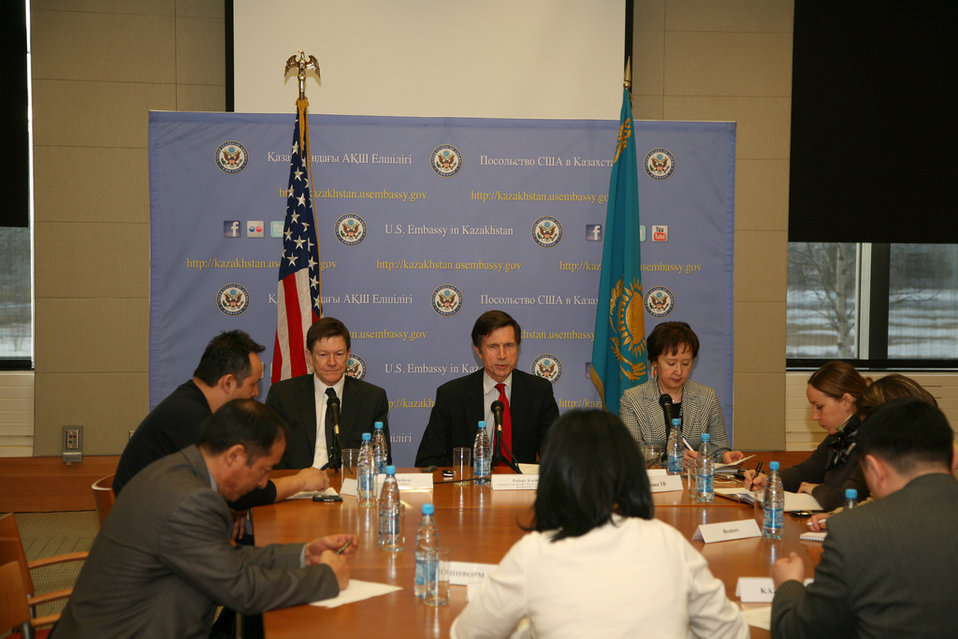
Assistant Secretary Blake and Charge d'Affairs Ordway Participate in a Media Roundtable

Assistant Secretary of State for South and Central Affairs Robert O. Blake, Jr., center, and Charge d’Affaires, a.i. John Ordway, left, meet with the press at the U.S. Embassy in Kazakhstan in Astana, on March 25, 2011.